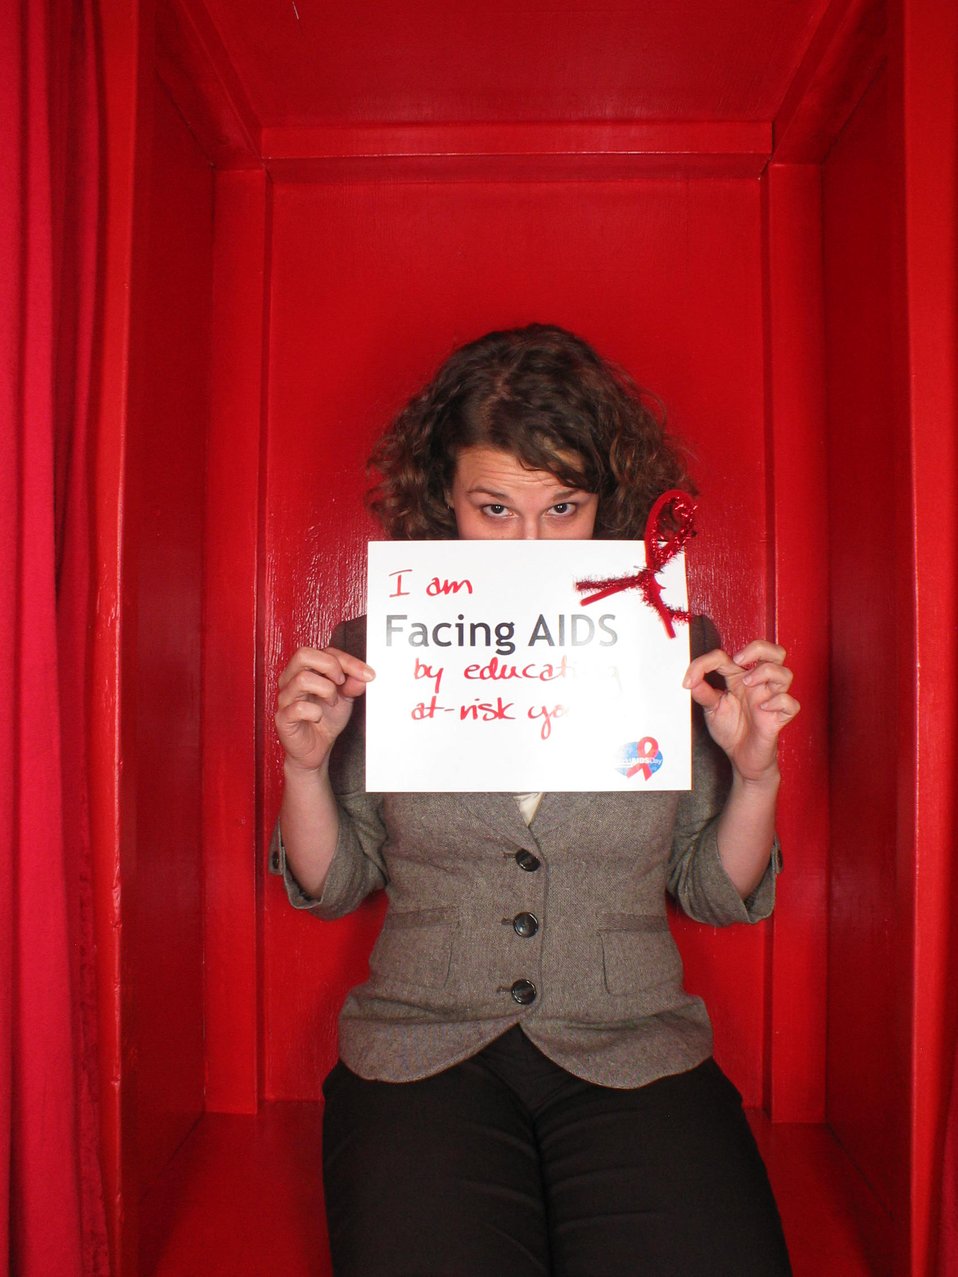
I am Facing AIDS by educating at-risk youth.